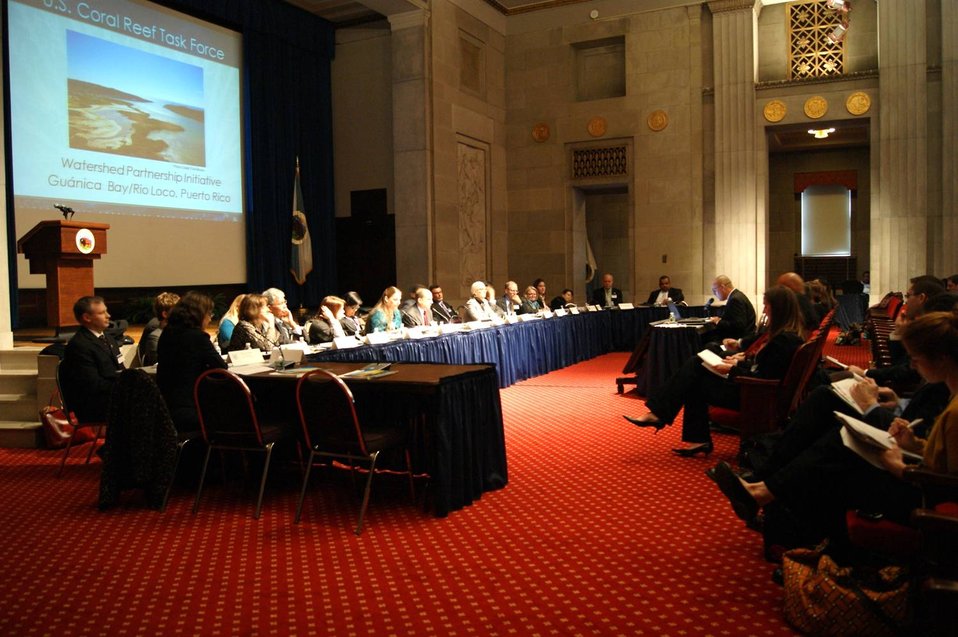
Coral Reef Task Force - Winter Meeting 2012